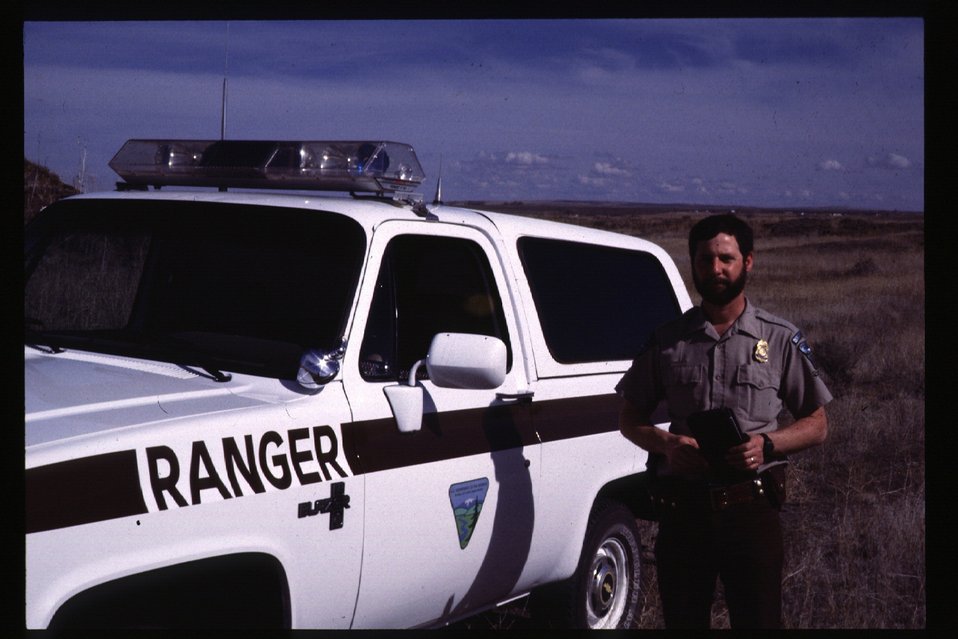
Ranger posing Idaho State Office LSRD Lower Snake River District